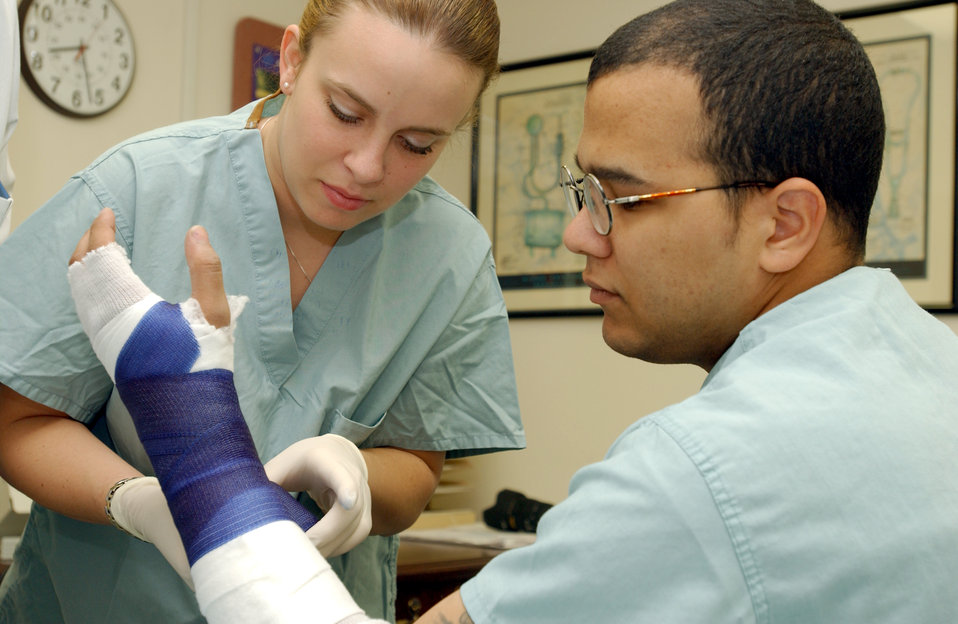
Cast away!

FAIRCHILD AIR FORCE BASE, Wash. -- Senior Airman Nichole Cunningham tests her skills as she wraps a practice cast on Boaz Butcher's arm Feb. 6. Airman Cunningham is assigned to the 92nd Medical Operations Squadron here and Mr. Butcher is a civilian employee with the 92nd Medical Group.